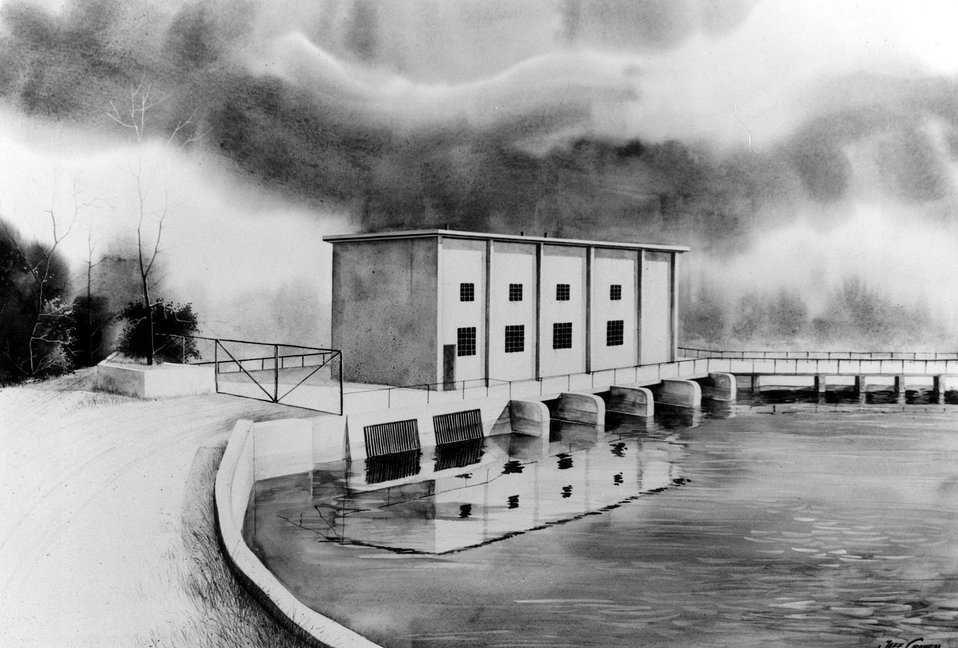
This artist's drawing of the lower power plant contrasts the old and the new. c. 1978